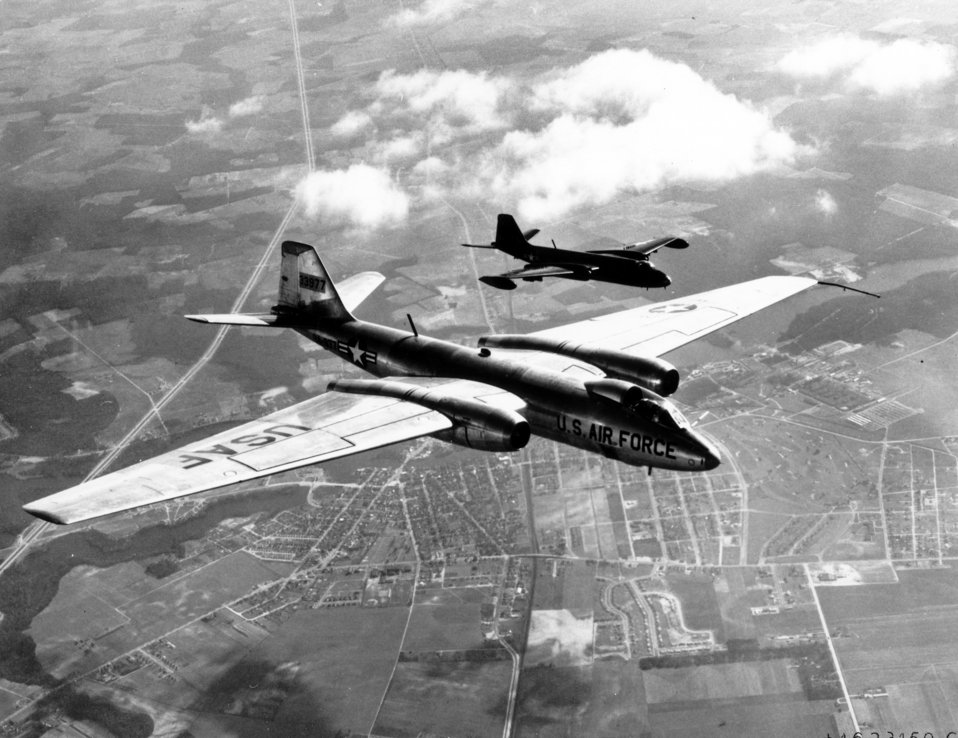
RB-57D

FIRST VIEW OF USAF RB-57D -- Tactical Air Command's B-57 bomber glides into position on the wing of this Strategic Air Command sister ship, the wider-winged RB-57D. The RB-57D was built strictly as a high altitude reconnaissance platform.